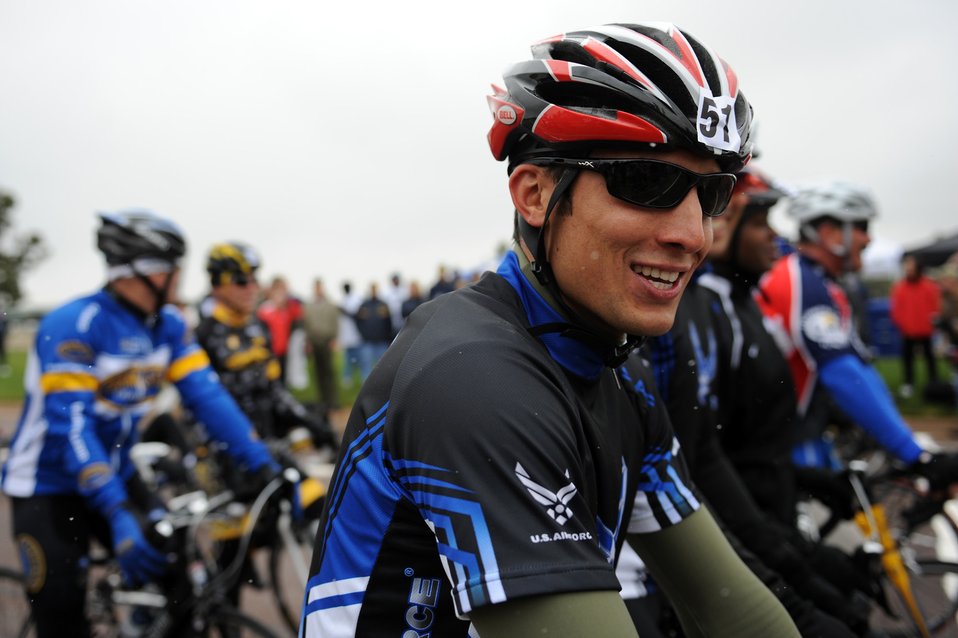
Warrior Games AF Cycling

Staff Sgt. Marc Esposito waits for the signal to begin the 20-kilometer upright bike race for the inaugural Warrior Games May 13, 2010, at the U.S. Air Force Academy in Colorado Springs, Colo. Sergeant Esposito is one of some 200 disabled veterans participating in the Paralympic-style competition May 10 through 14.